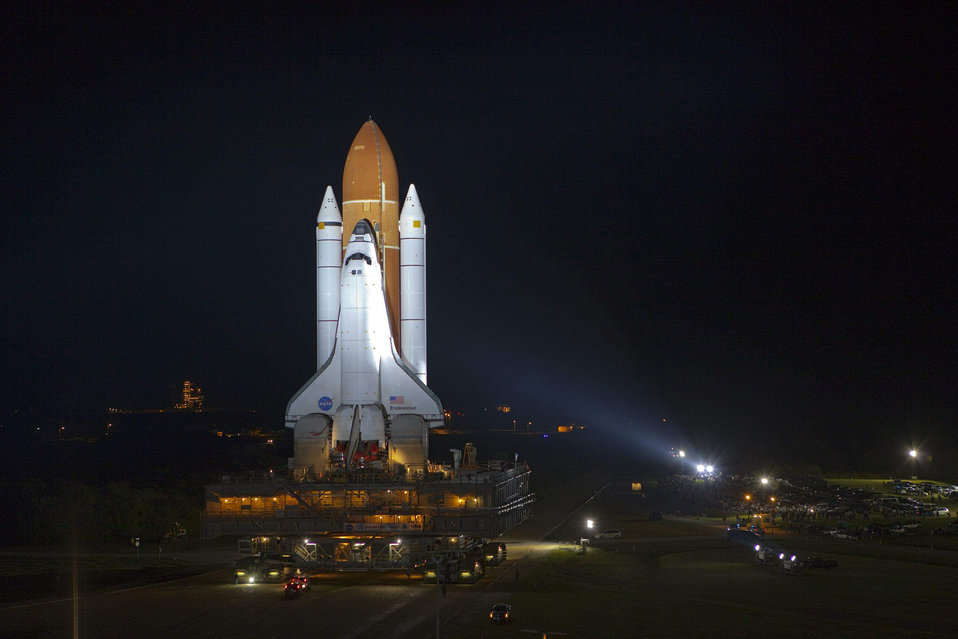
National Guard supports final Endeavour flight

Space shuttle Endeavour moves along the crawlerway from the vehicle assembly building to Launch Pad 39A March 11, 2011, at NASA's Kennedy Space Center, Fla.